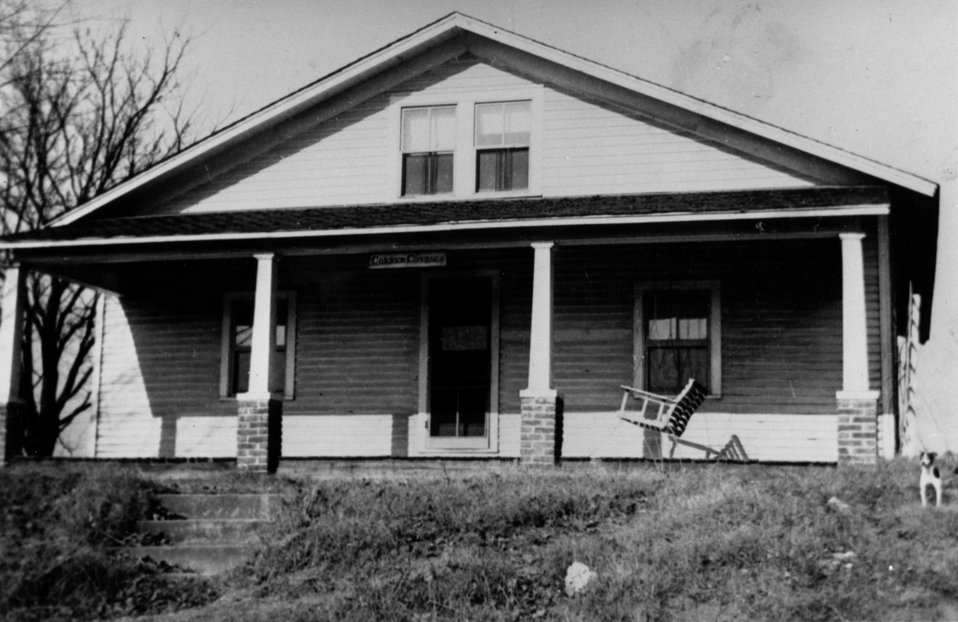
Early settlers at Oak Ridge